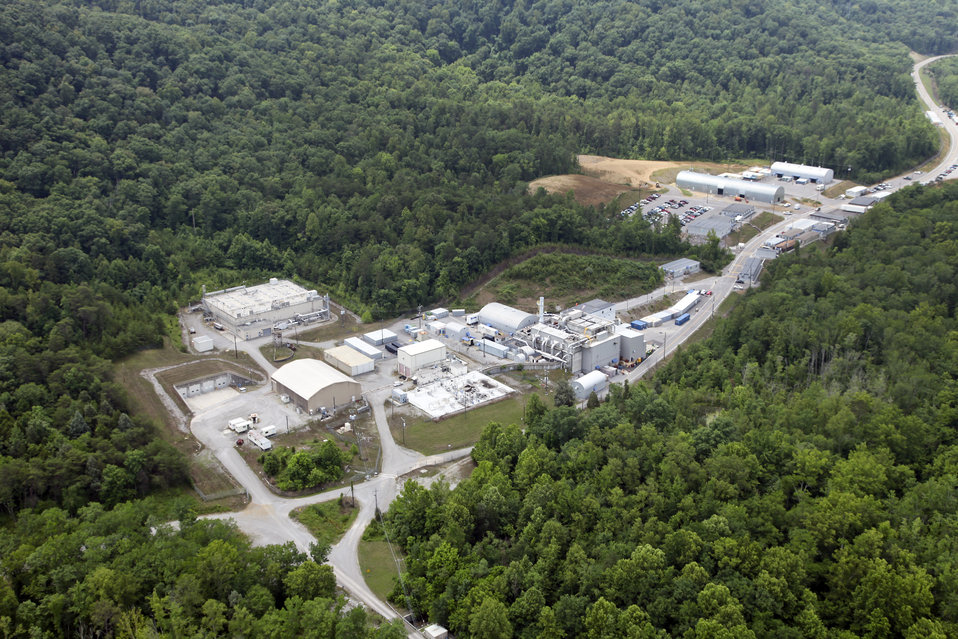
11

TRU